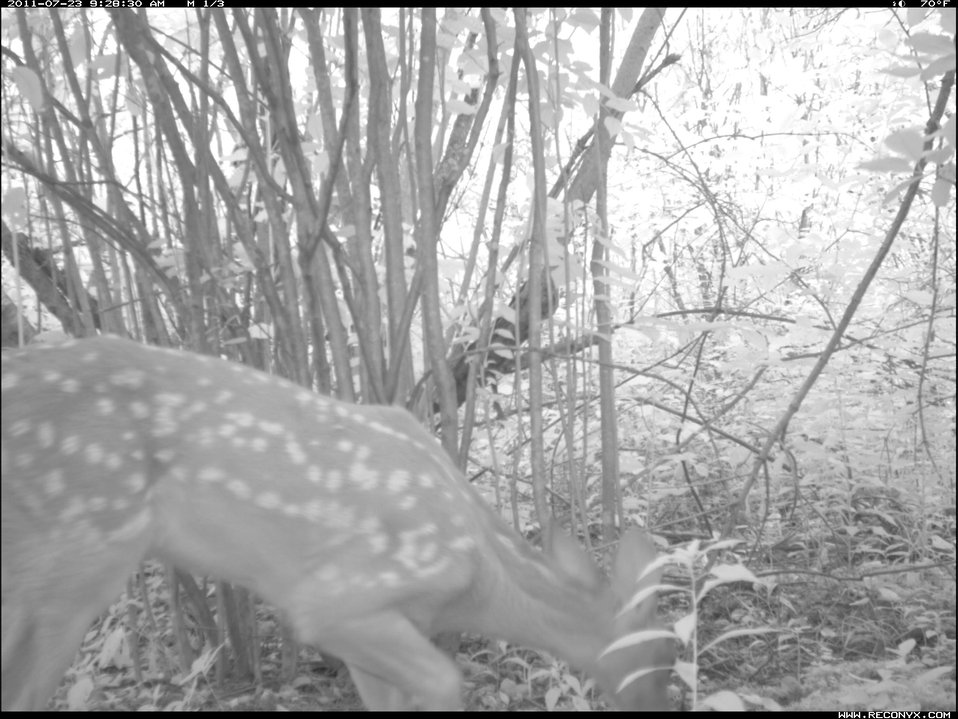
Deer Fawn